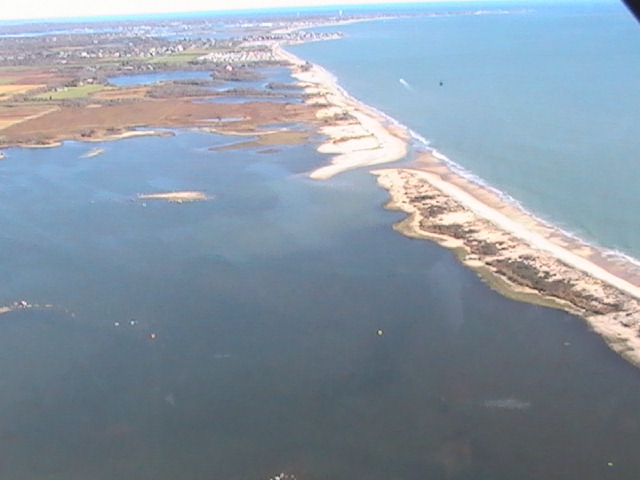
Breach at Trustom Pond National Wildlife Refuge (RI)

New breach on the Trustom Pond National Wildlife Refuge Rhode Island. Trustom has not naturally breached in over a decade prior to Hurricane Sandy.